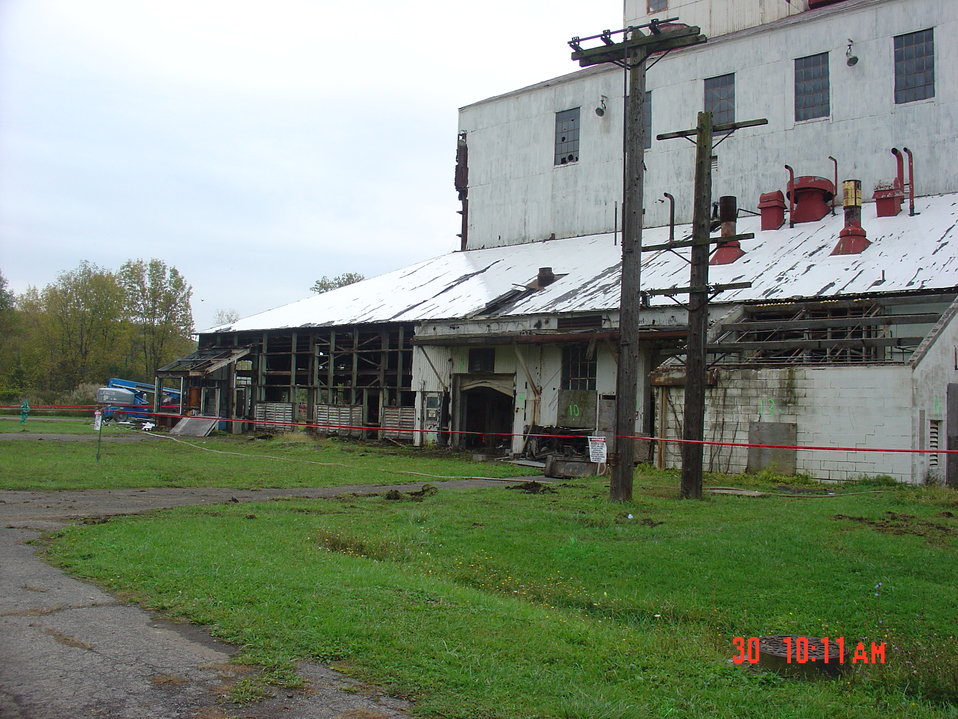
NFSS 401 ASBESTOS SIDING REMOVAL

Activities from the Niagara Falls Storage Site, which is associated with the former Lake Ontario Ordnance Works. Formerly Utilized Sites Remedial Action Program (FUSRAP), a program initiated in 1974 to identify, investigate and clean up or control sites that were part of the Nation's early atomic energy and weapons program. Activities at the sites that are eligible for FUSRAP were conducted by Manhattan Engineer District (MED) or the Atomic Energy Commission (AEC), both predecessors of the Department of Energy (DOE). The U.S. Army Corps of Engineers was assigned management of FUSRAP by Congress in 1997.